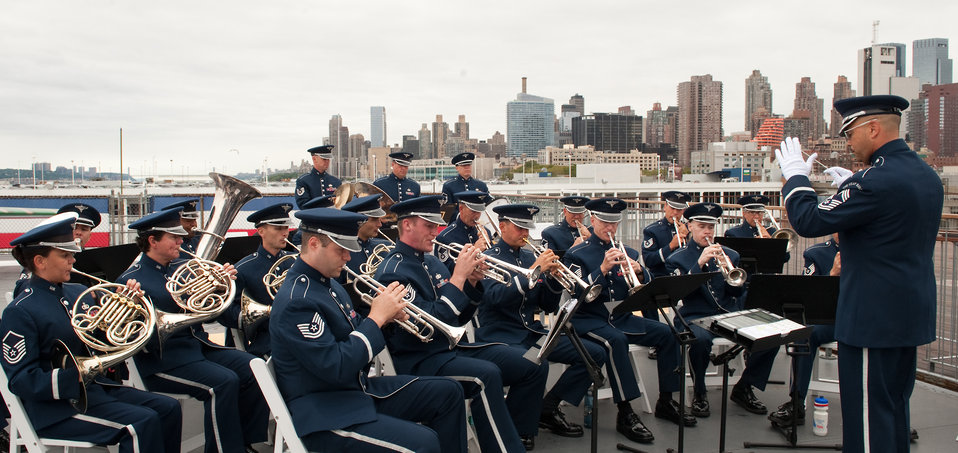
Air Force Week New York City Proclamation Ceremony

Members of the Air Force Band performs during the Air Force Week New York City proclamation ceremony at the Intrepid Sea, Air & Space Museum Aug. 24, 2010, in New York City.